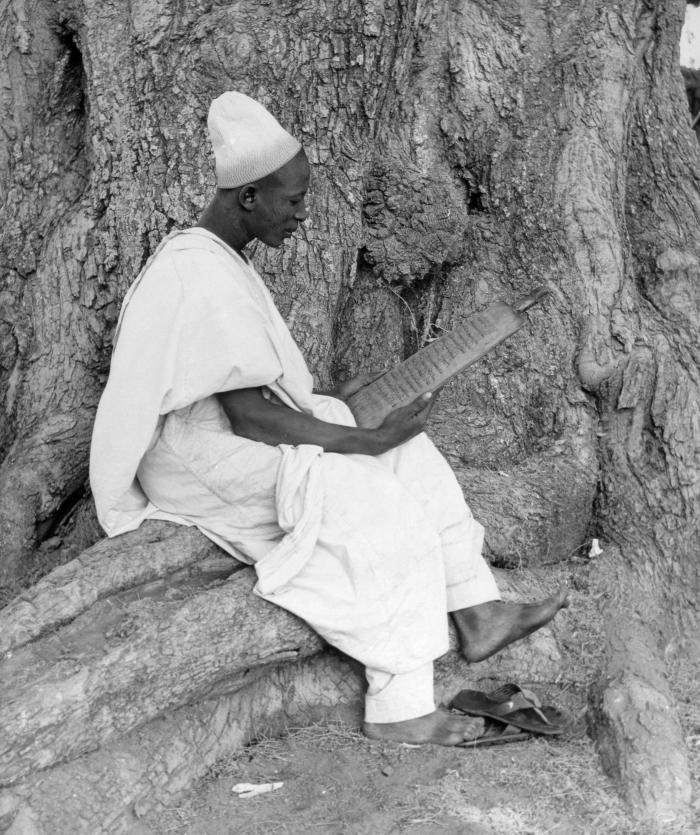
This 1969 image was captured in Niger, West Africa during the Smallpox Eradication and Measles Control Program efforts in that country. The seated Nigerien man depicted in this photograph was reading from a wooden writing tablet.